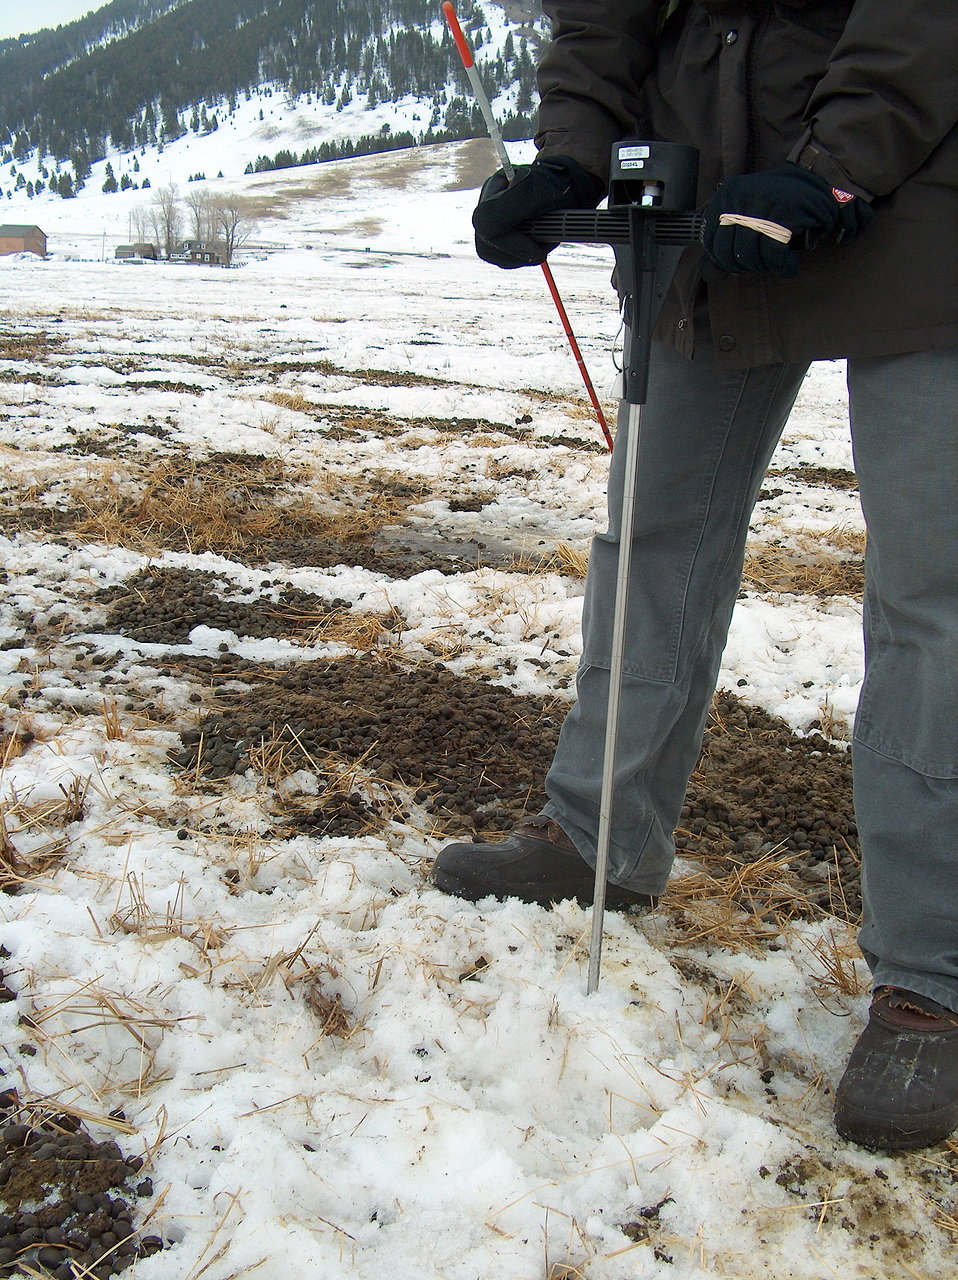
Collecting Environmental Data at the National Elk Refuge

Lee Jones of the Wildlife Health Office measures surface compaction at the National Elk Refuge in Wyoming. Investigation of environmental variables potentially influencing disease at the refuge is an important component of our health monitoring study.